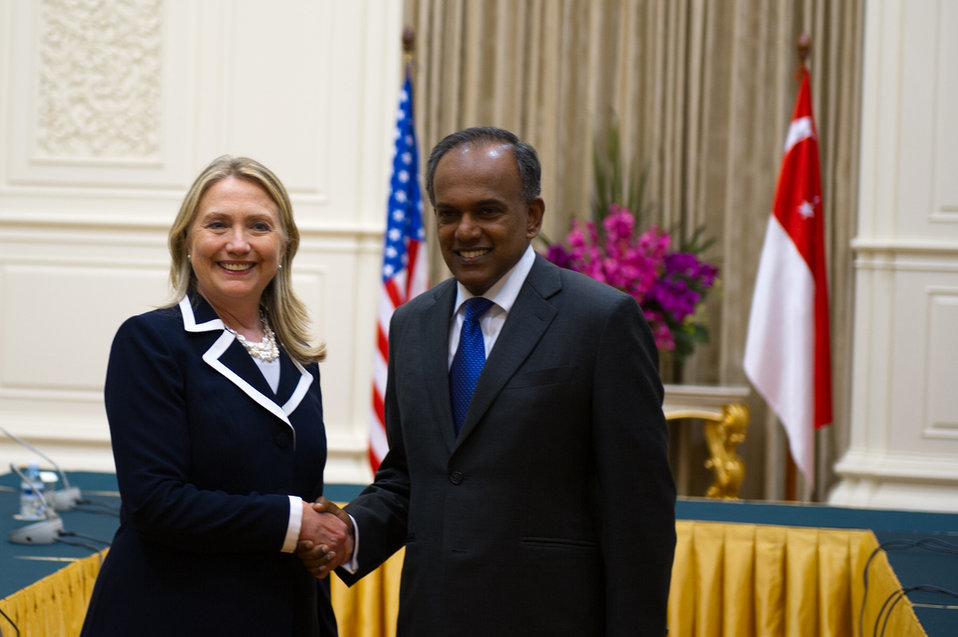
Secretary Clinton Meets With Singaporean Foreign Minister K. Shanmugam

U.S. Secretary of State Hillary Rodham Clinton meets with Singaporean Foreign Minister K. Shanmugam in Phnom Penh, Cambodia, on July 12, 2012.